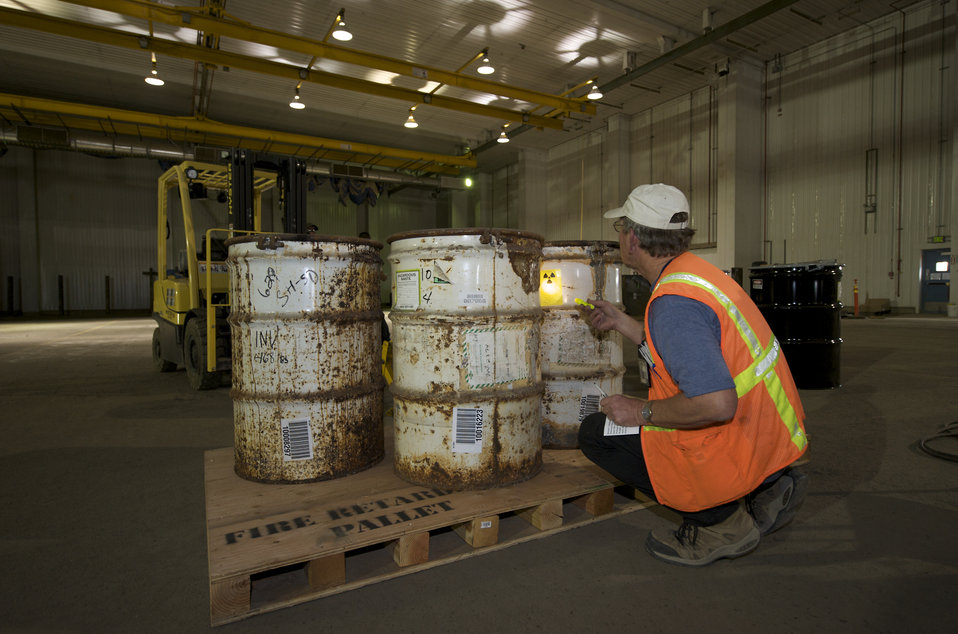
Idaho’s Advanced Mixed Waste Treatment Project Workers Complete Recovery Act Project

An AMWTP technician inspects a drum containing
radioactive waste.